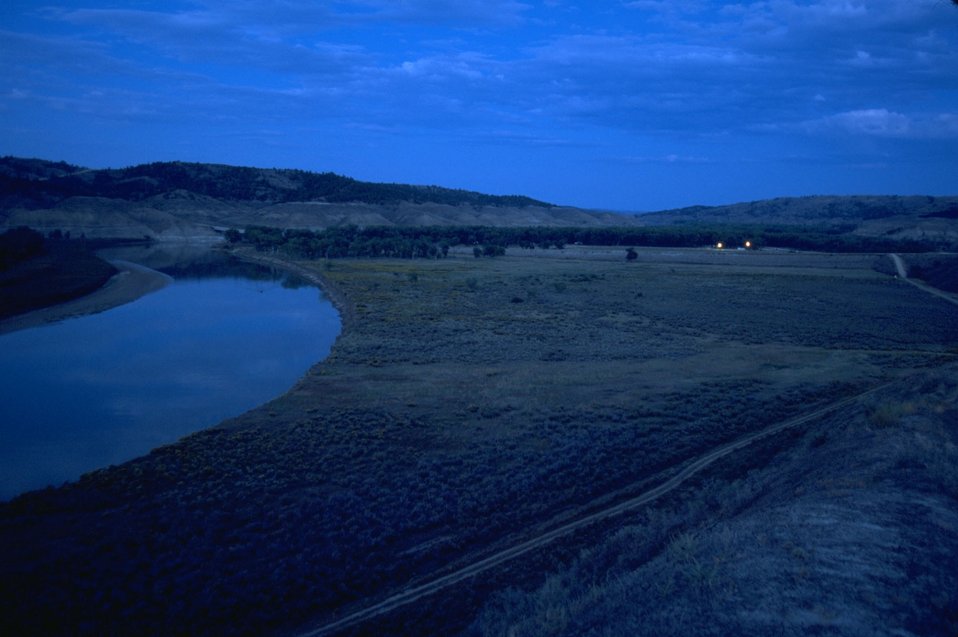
Sunset at Coal Banks Landing